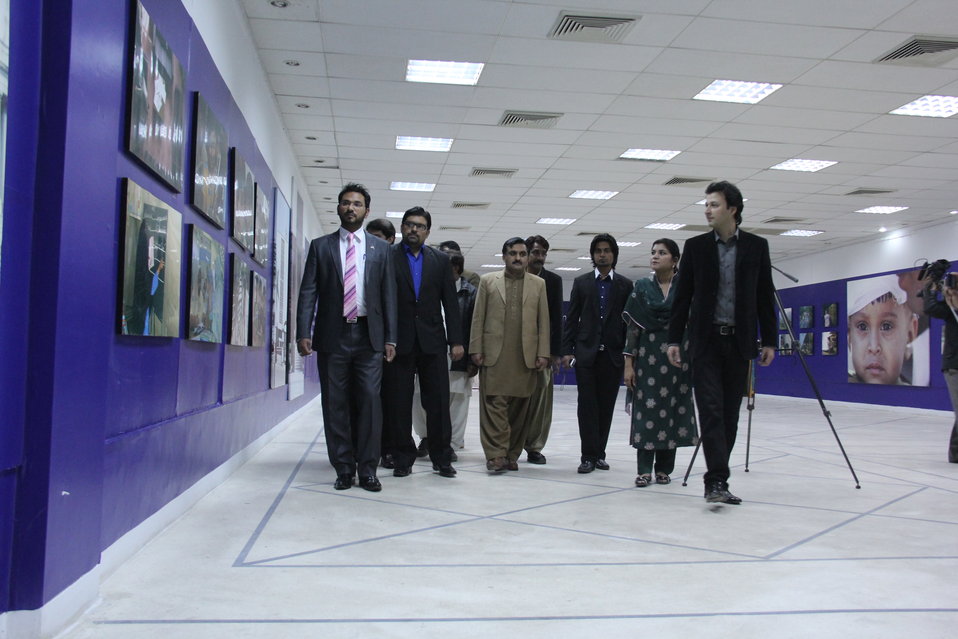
The exhibition showcases a retrospective multi-media display from all U.S.-funded development initiatives over the last 50 years.